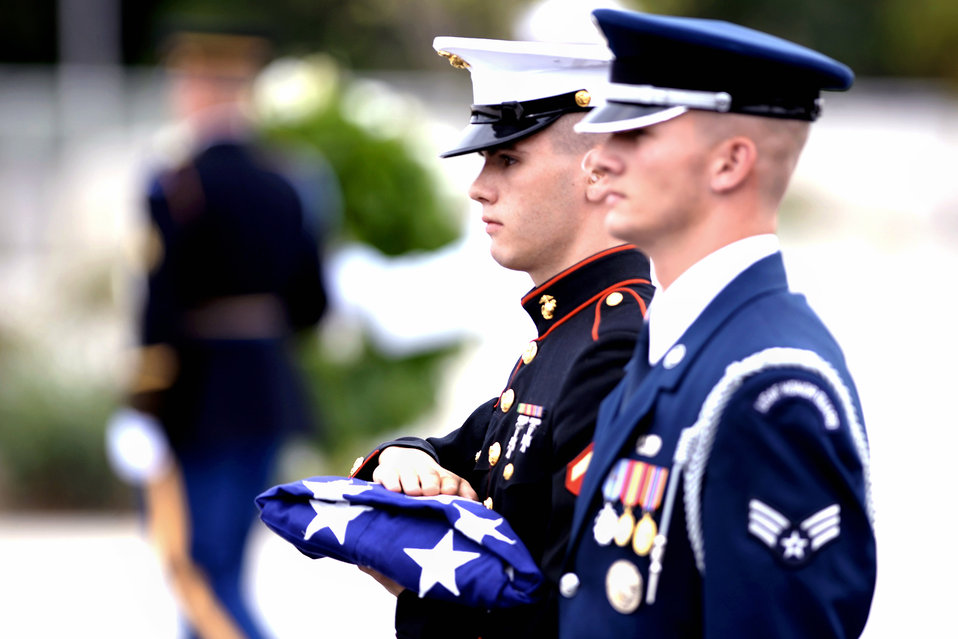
Pentagon Memorial opens to public

Members of a joint service honor guard prepare to raise the flag during the Pentagon Memorial dedication ceremony Sept. 11 at Alexandria, Va. The national memorial is the first to be dedicated to those killed at the Pentagon on Sept. 11, 2001. The site contains 184 inscribed memorial units honoring the 59 people aboard American Airlines Flight 77 and the 125 in the building who lost their lives that day.